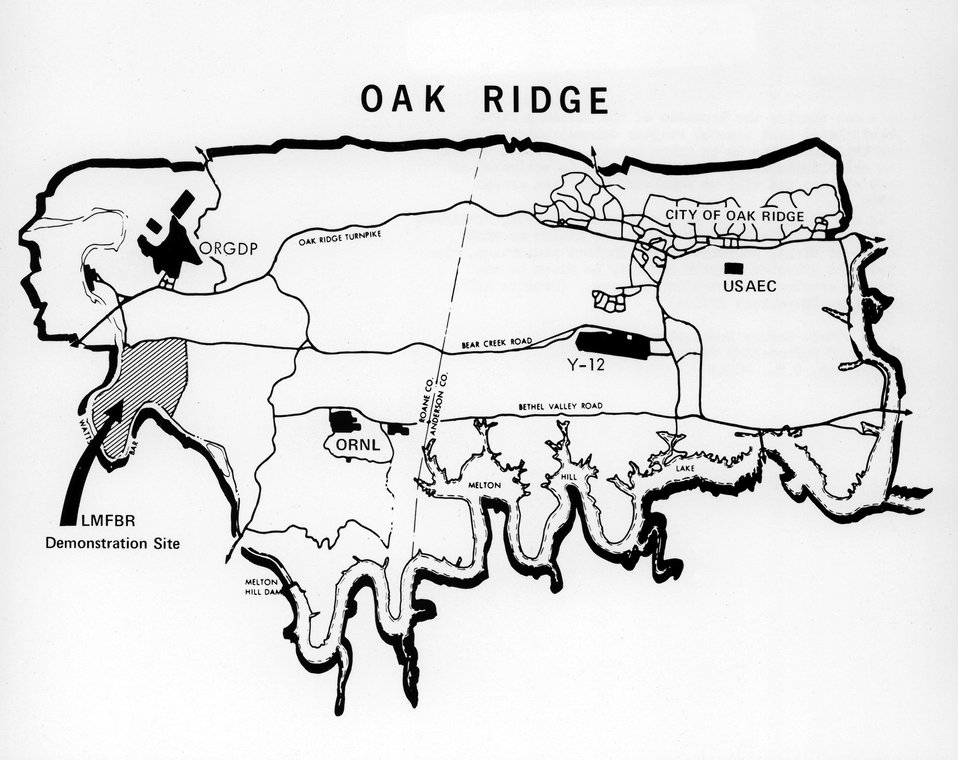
Site map showing the location of the nation's first liquid metal fast breeder reactor demonstration plant. The 1360 acre site is in Roane County, Tennessee within the city of Oak Ridge. c. 1972